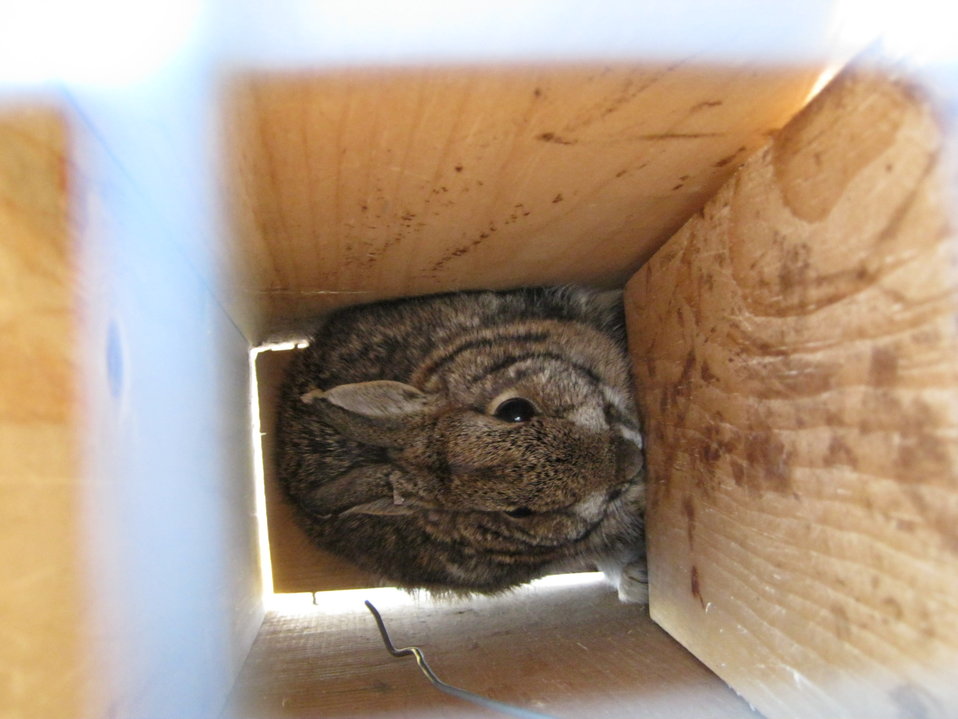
Finding New England cottontails

A cottontail that has been trapped for identification and will be released.